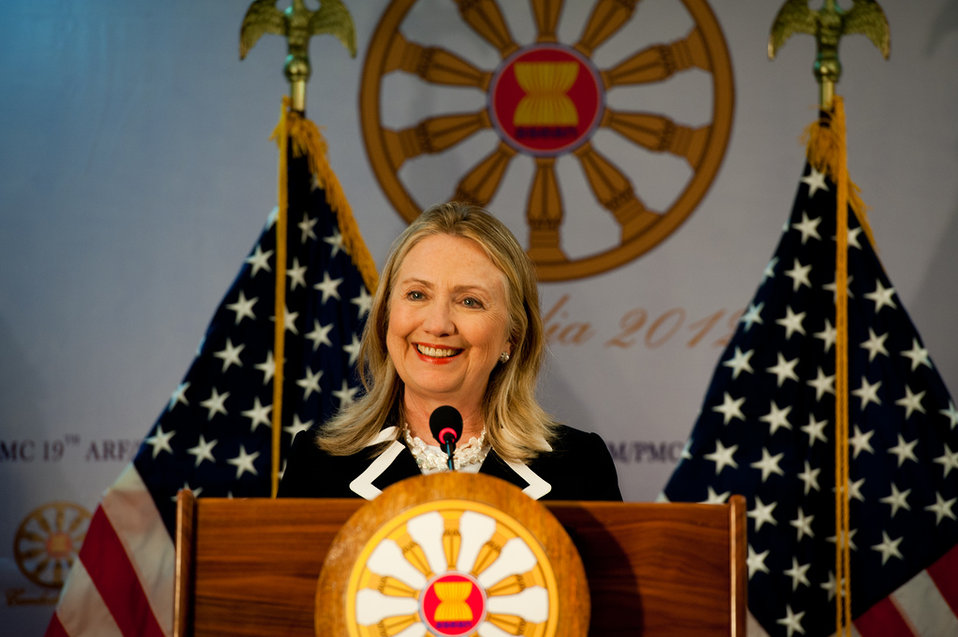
Secretary Clinton Addresses the Press

U.S. Secretary of State Hillary Rodham Clinton addresses the press in Phnom Penh, Cambodia, on July 12, 2012.